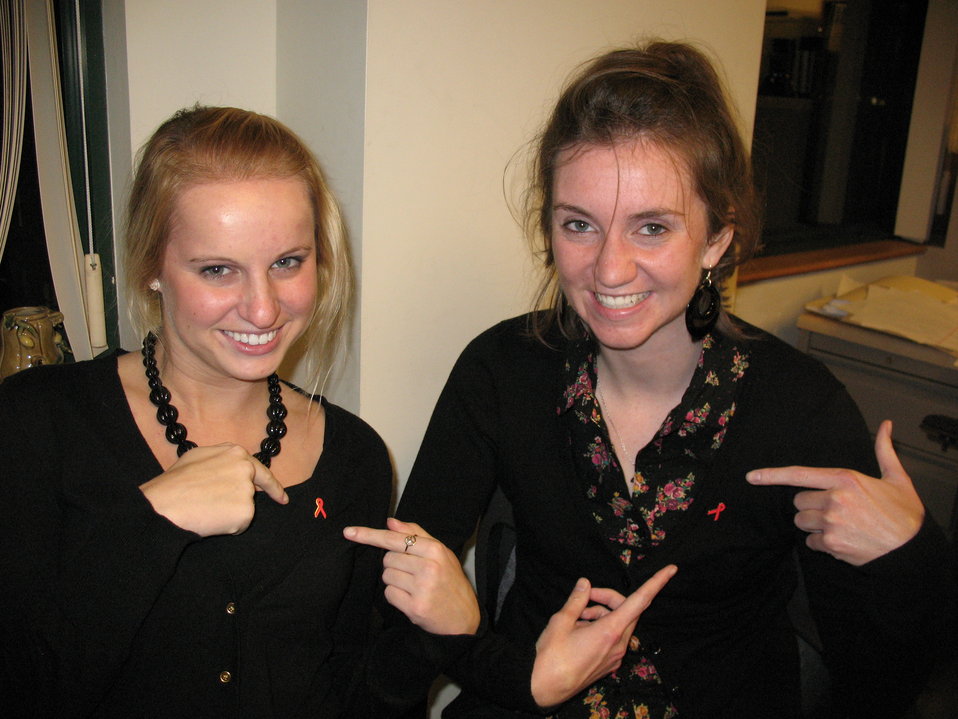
OandL